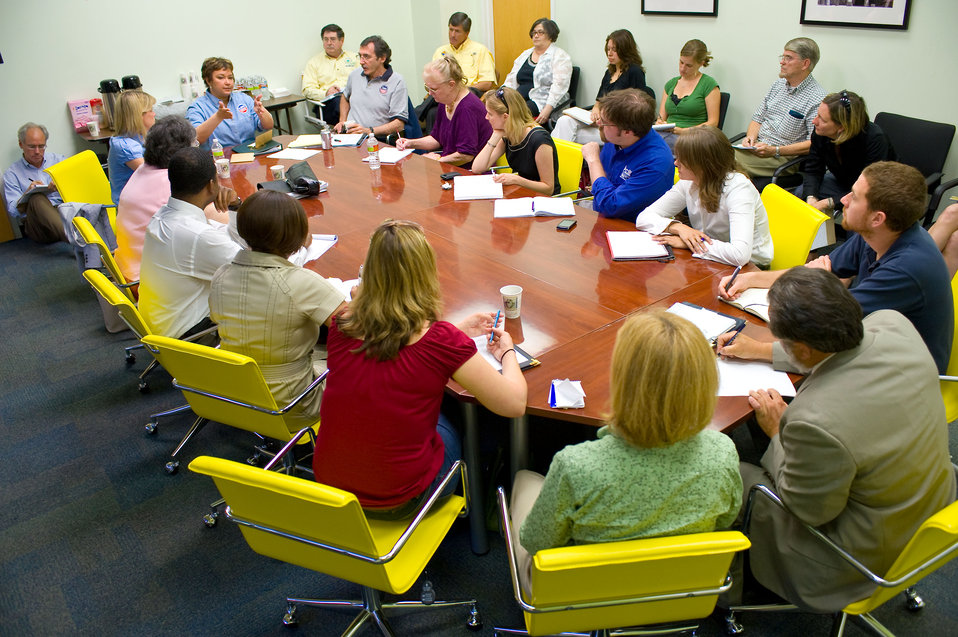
EPA Administrator Meets with Gulf Region Scientists

May 11, 2010 - EPA Administrator Lisa P. Jackson discusses technical issues in BP Oil spill remediation efforts with NOAA representatives.